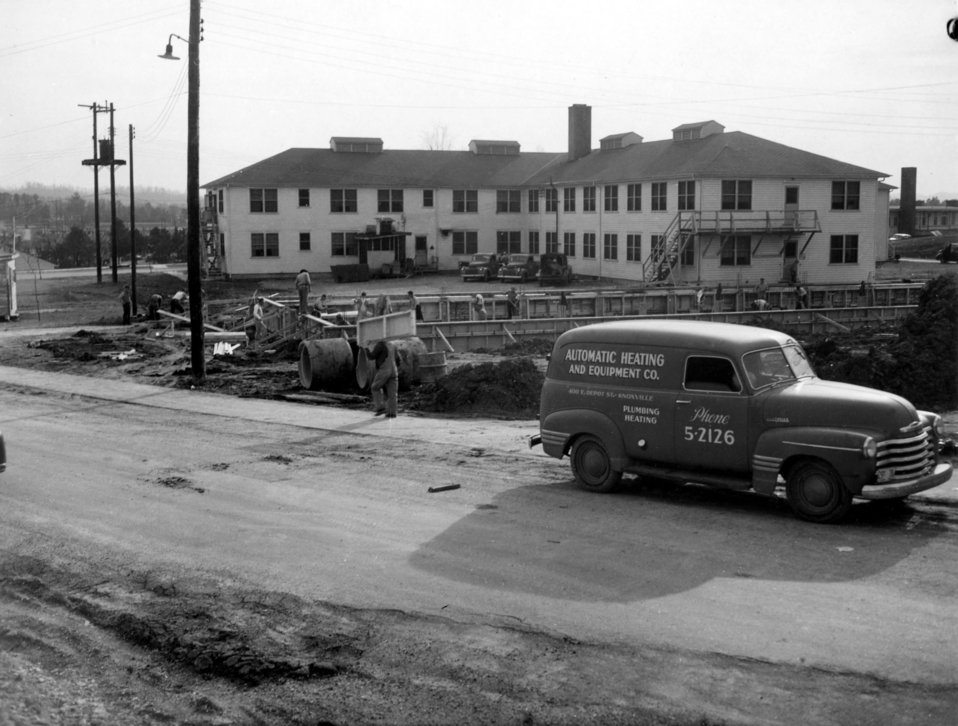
Early Construction Guest House Oak Ridge

5352-5 DOE photo by Ed Westcott 8-19-1949 Oak Ridge Tennessee